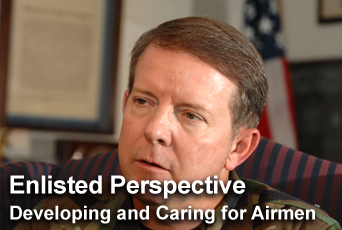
Chief Master Sgt. of Air Force Rodney J. McKinley

In the newest